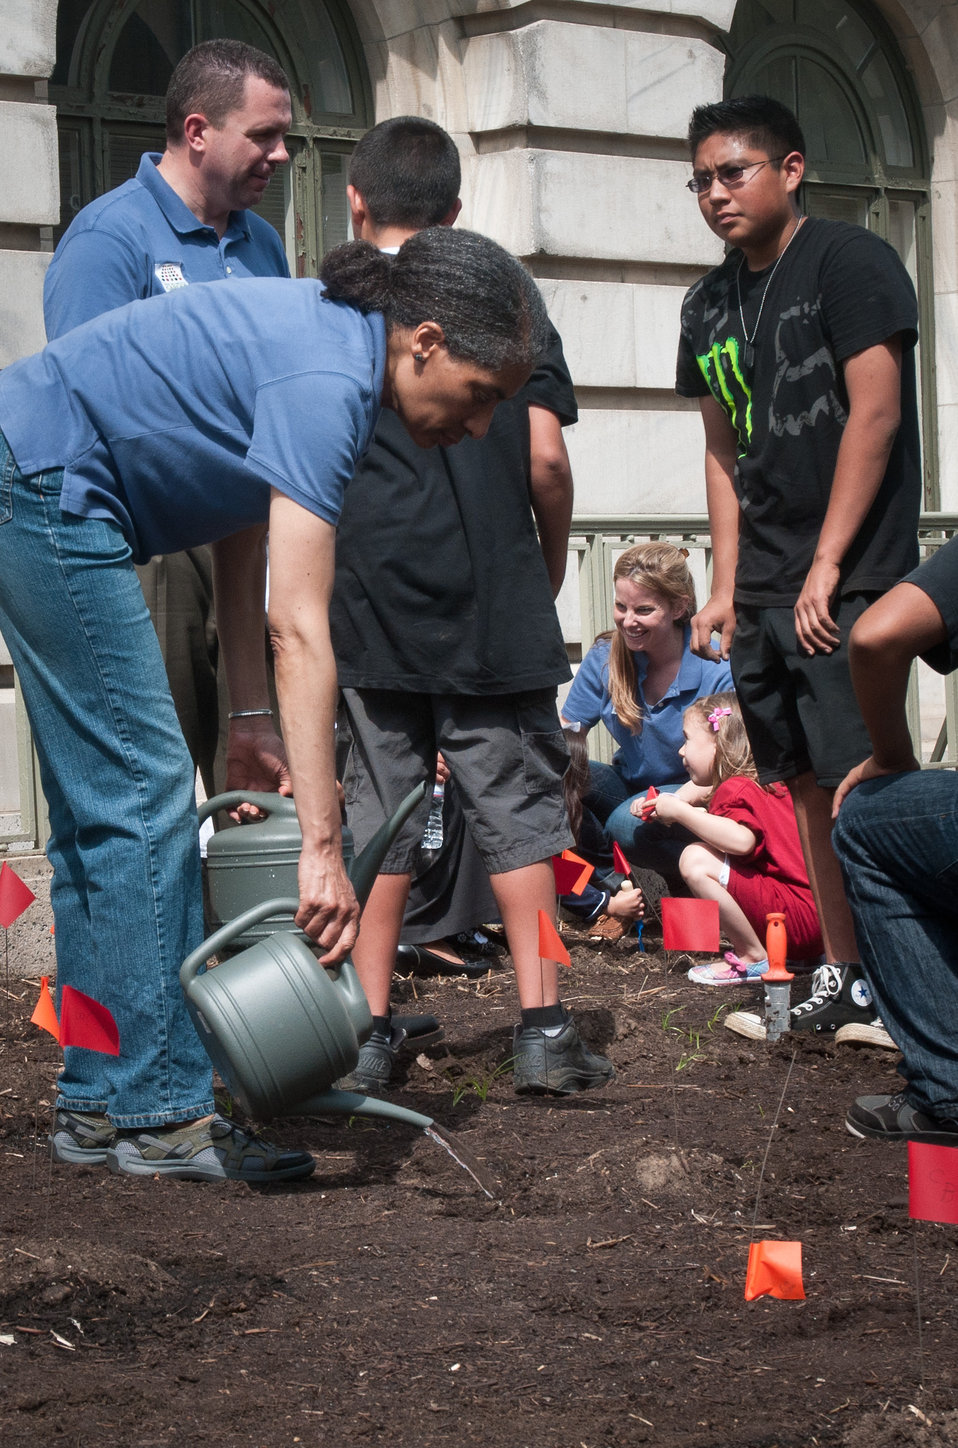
Executive Master Gardeners helped more than 30 students from Eastern and Western Tribes, Southeast Alaska, and Tuba City, Arizona on Wednesday, April 27, 20ll in Washington, DC. The students came to plant vegetable seeds that are indigenous to North America. The plants in particular are known as the Roots of American Agriculture, the design is that of a Hidatsa Three Sisters Garden, the traditional design of the Hidatsa people. In the northern planes, the Hidatsa, Mandan, and Arikara peoples gardened along the floodplain of the Missouri River using this design. It is designed to have alternating, staggered rows of corn and beans, with sunflowers growing along the northern edge of the garden. Squash is planted after every row of corn and beans and around the east, south, and west edges of the garden.